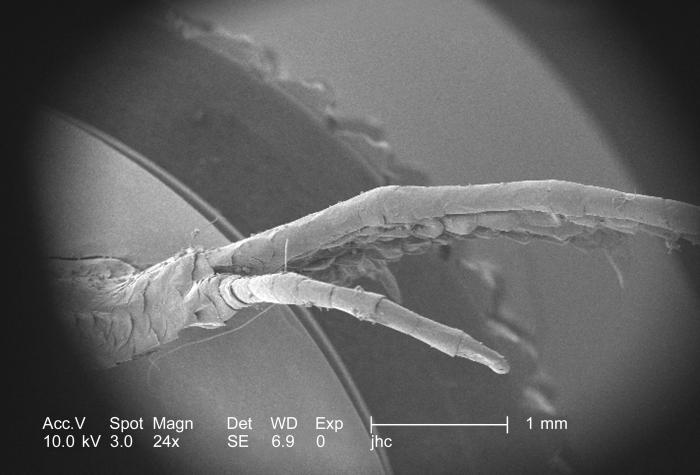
Photographed here under a low magnification of 24x, this scanning electron micrograph (SEM) depicted some of the external morphologic features of a deceased lizard's foot found desiccated on the suburban grounds of Decatur, Georgia. Note the armor-like appearance of the horny scaled exterior. The clawed morphology displayed by the reptile's foot closely reflects that displayed by birds as well.